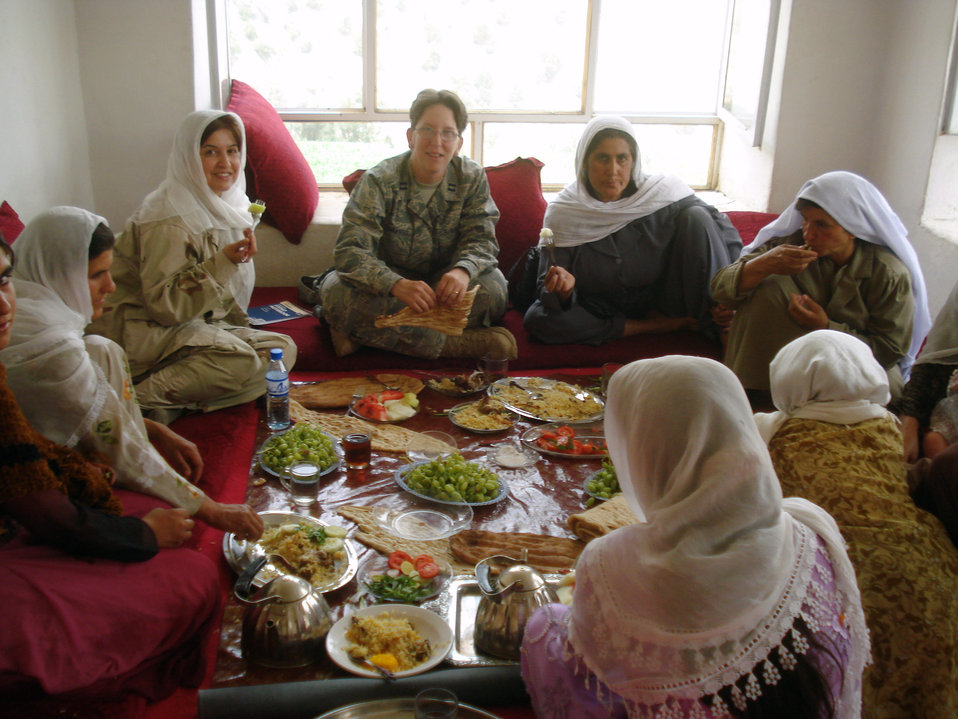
More Afghan women attending Shuras shows progress

A group of Afghan women and Capt. Jillian Torango from the Panjshir Provincial Reconstruction Team, participate in a women's shura in Sangee Village, Anaba District, Afghanistan, Aug. 4. Approximately 100 women attended and discussed their issues with the Panjshir PRT Woman's Affairs team.